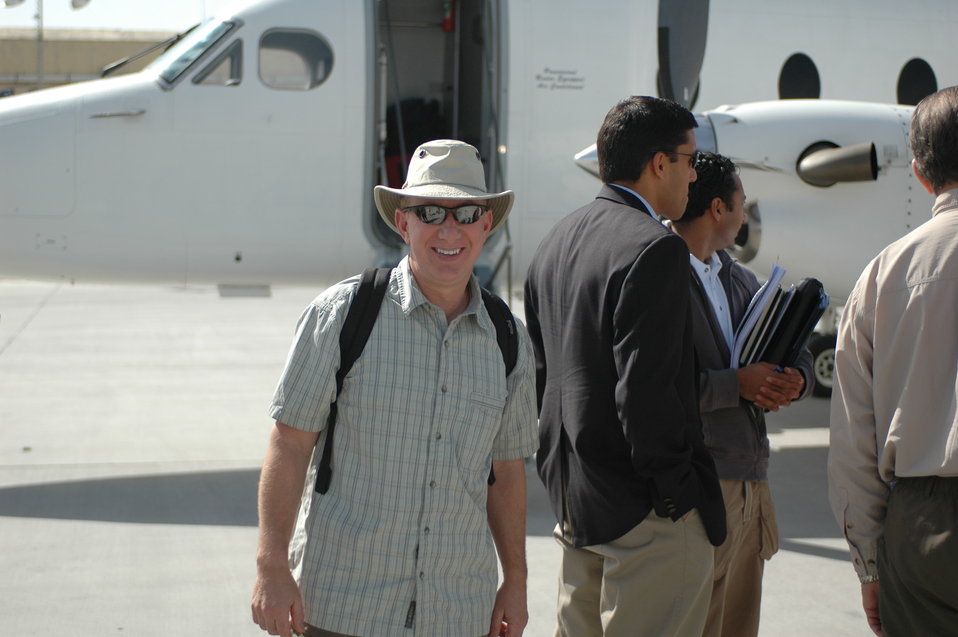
Dr Shah Visits Kandahar April 9, 2010